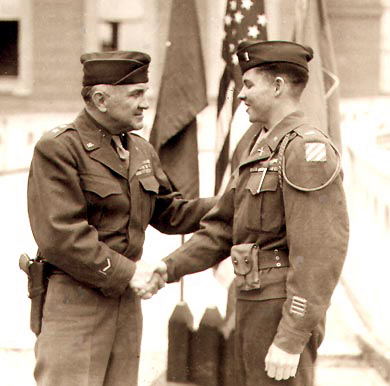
U.S. Heroes

Retired Maj. Gen. John W. O'Daniel presents 1st Lt. Audie Murphy with a Distinguished Service Cross.